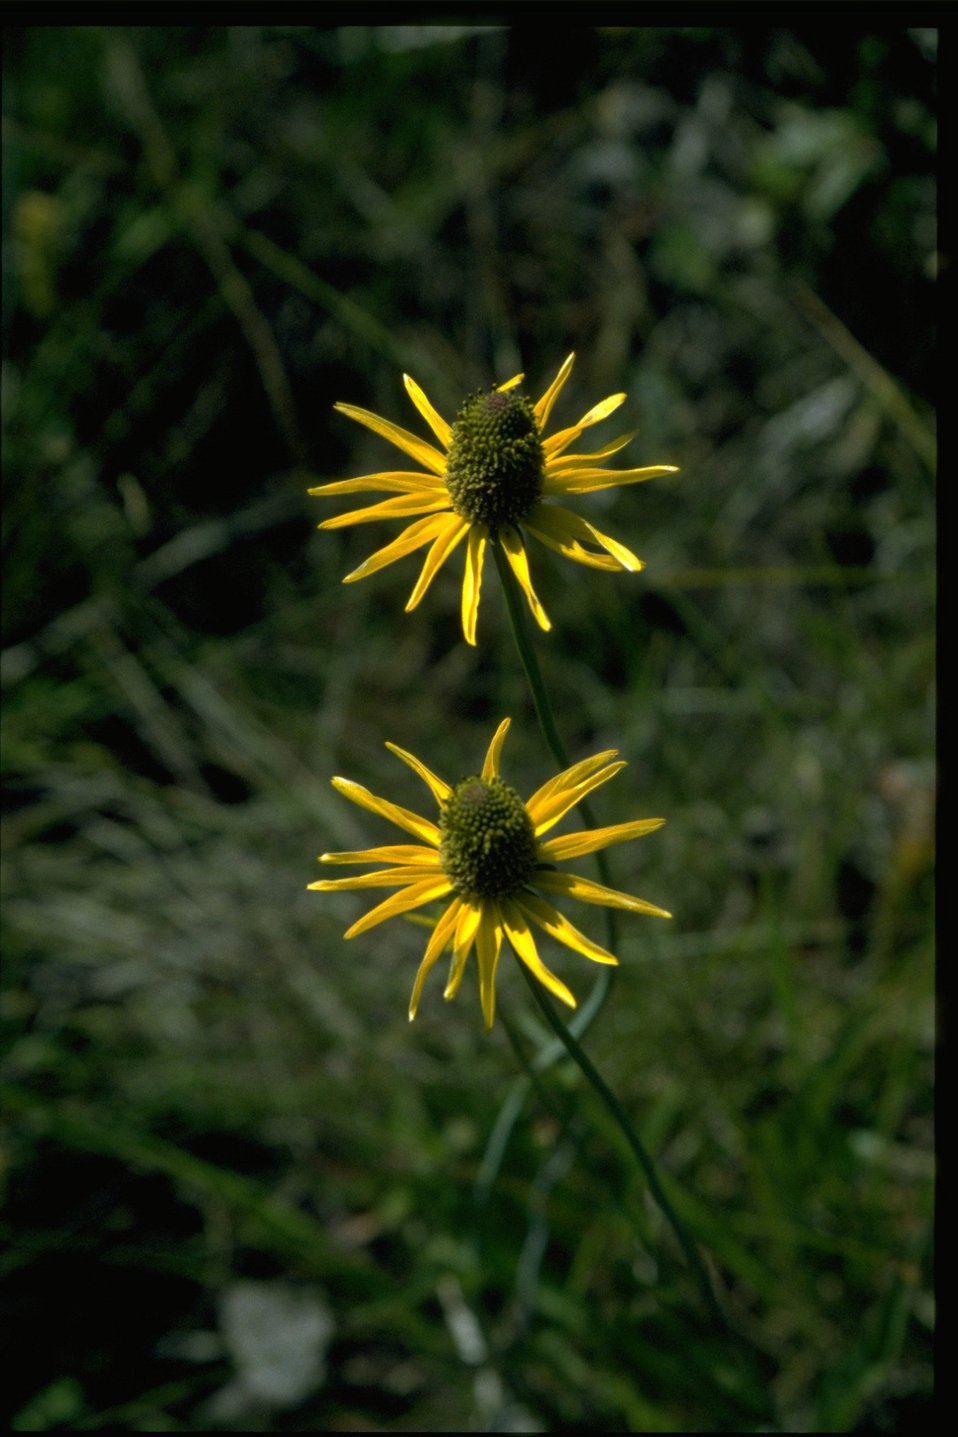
Closeup shot of Rudbeckia californica var gluca.